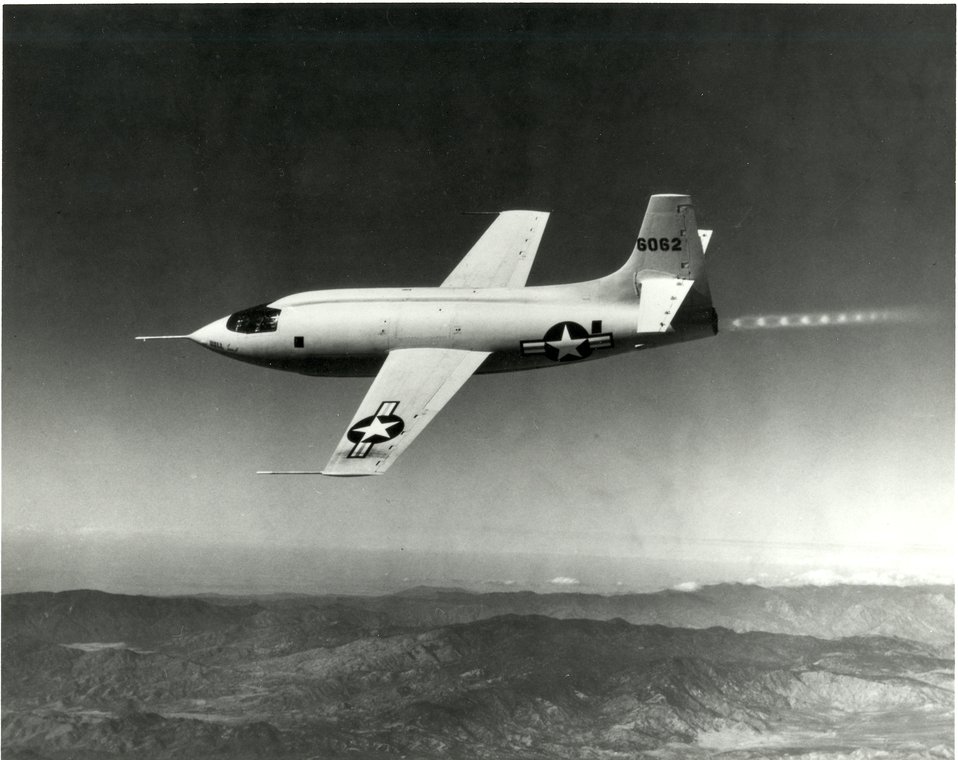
Bell X-1

The first supersonic flight flown on Oct. 14, 1947 with the Bell X-1.